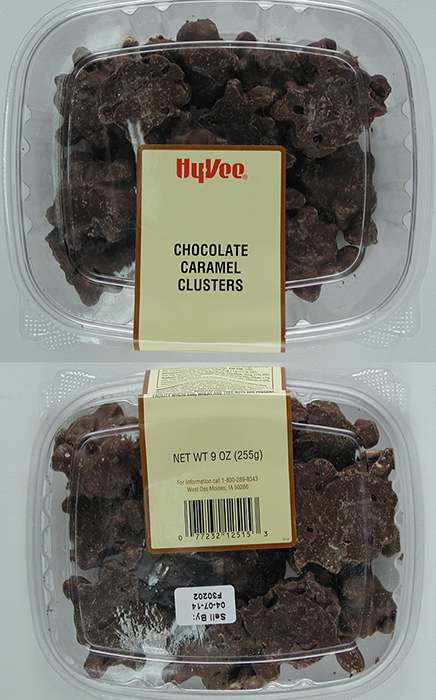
RECALLED – Chocolate Caramel Clusters and Chocolate Covered Caramels

November 11, 2013 – Product Recall – Palmer Candy Company Voluntarily Recalls HyVee Chocolate Caramel Clusters and HyVee Chocolate Covered Caramels Due to Undeclared Peanut Allergen.